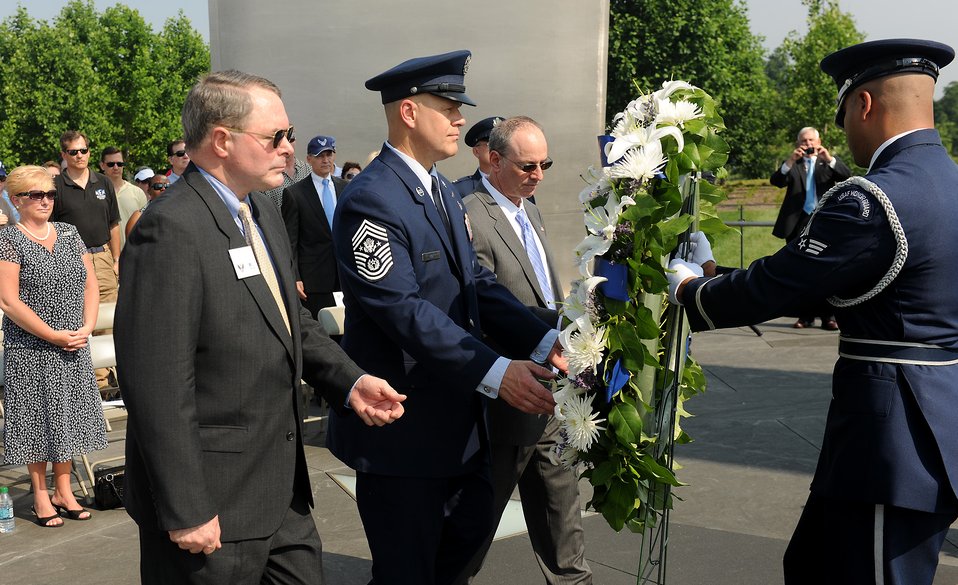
CMSAF Reads Honors Fallen on Memorial Day

Mike Dunn (from left), president and chief executive officer of the Air Force Association and the Air Force Memorial Foundation; Chief Master Sgt. of the Air Force James Roy; and Dan Derrow, deputy chief executive officer of the Air Force Sergeants' Association, prepare to lay a wreath during a Memorial Day ceremony May 30, ,2011, honoring those who gave their lives in service in the last year. The ceremony was at the Air Force Memorial in Arlington, Va. During the ceremony, Chief Roy read the names of each of the Airmen who died in combat in the past year.